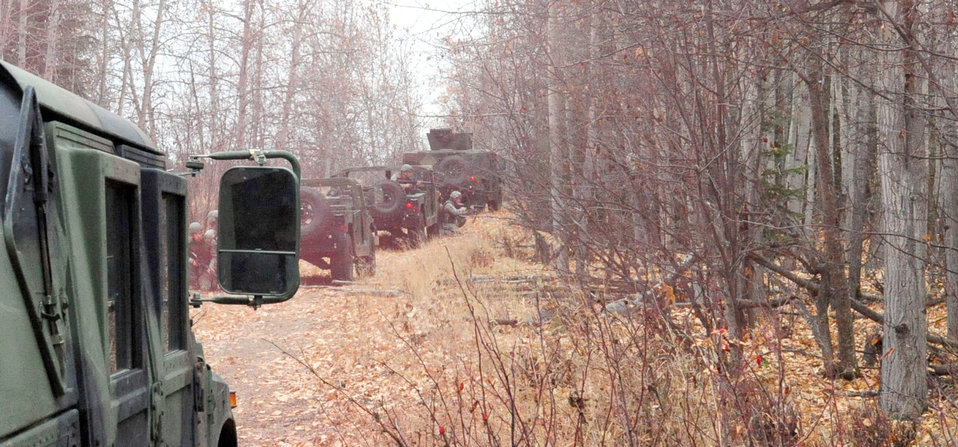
Combat skills training

Airmen set up a